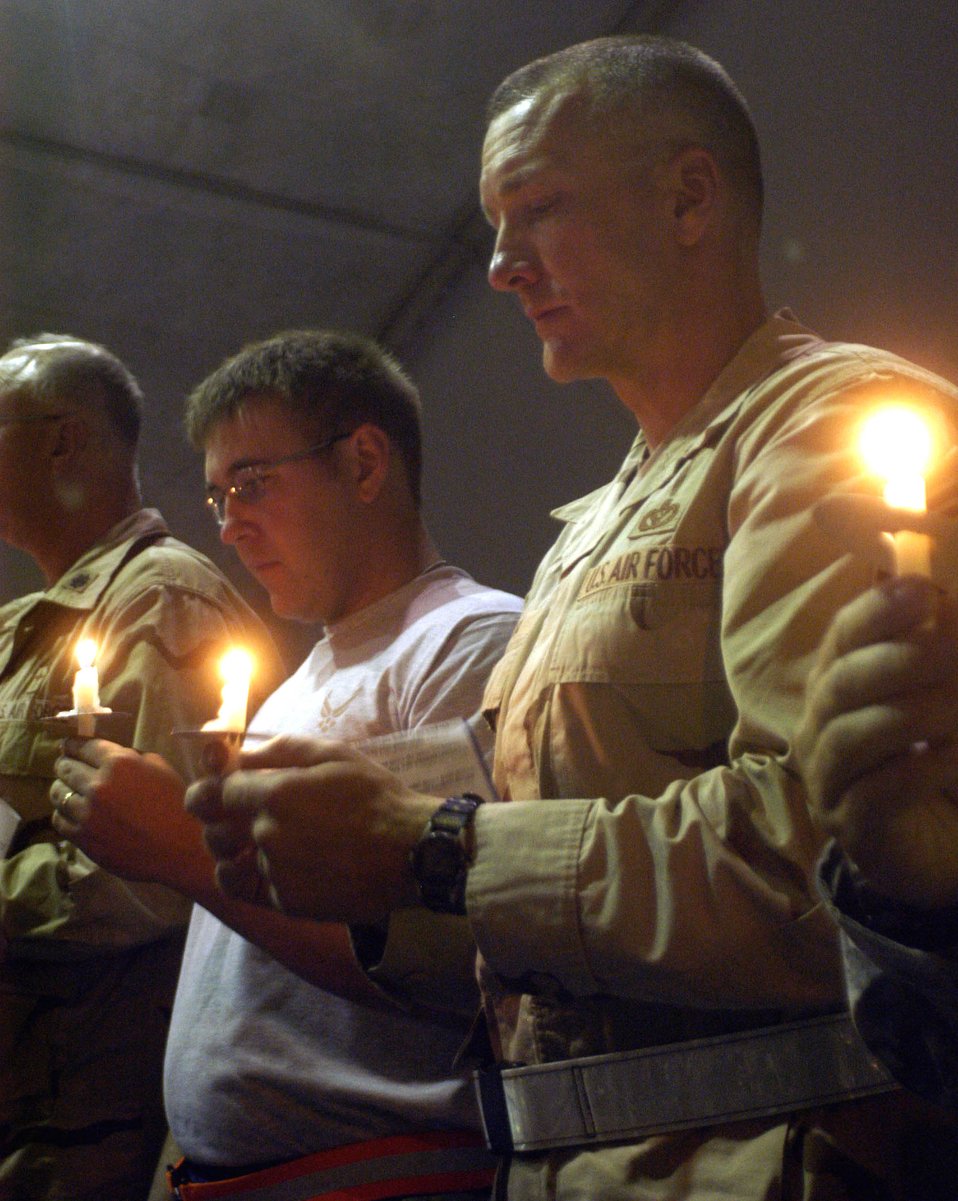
Five years later Airmen remember 9/11, continue the fight

Chief Master Sgt. Mark Brejcha (right) and Senior Airmen Reese Vaughan stand in silence during the 9/11 candlelight service at Bagram Airfield, Afghanistan. Chief Brejcha is the 755th Expeditionary Mission Support Group superintendent and Airman Vaughan is a Bagram personnel readiness team member. More than 100 deployed members attended the ceremony to remember the lives of those lost on 9/11.